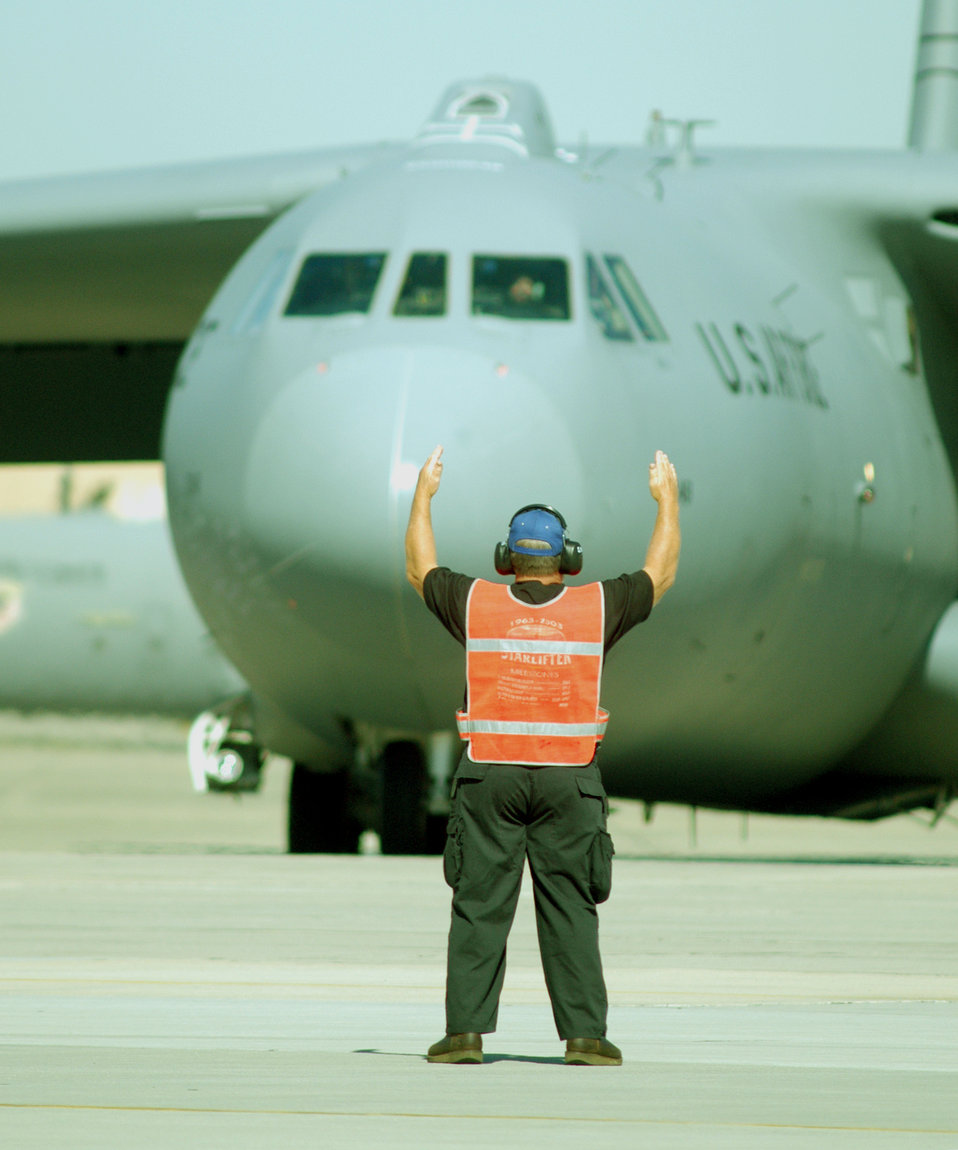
Taxi!

ROBINS AIR FORCE BASE, Ga. -- Steve Neal marshals out a C-141 Starlifter headed to March Air Reserve Base, Calif. The aircraft was the last C-141 to go through programmed depot maintenance here. Neal is a C-141 run technician.